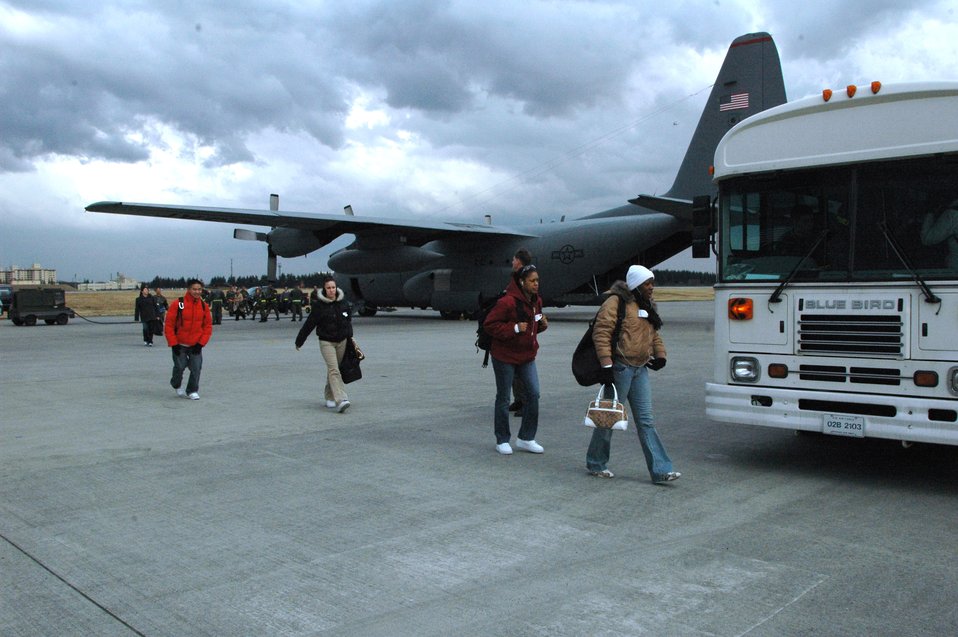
Yokota tests non-combatant evacuation operations

Service members from Kunsan Air Base, Korea, playing non-combatant evacuees, walk along the Yokota Air Base, Japan, flight line. The role players were assisting March 6 in an operational readiness inspection.